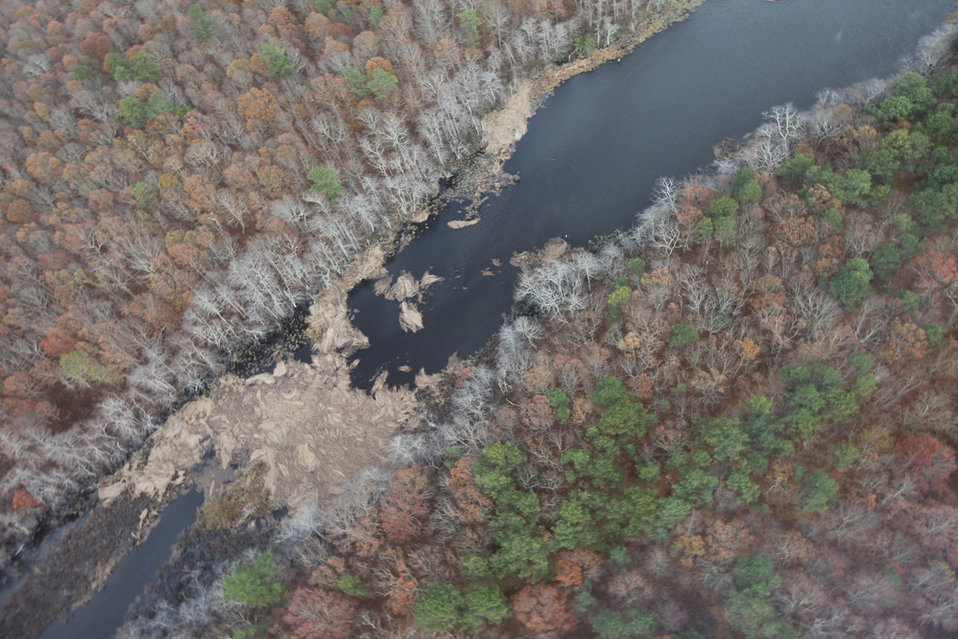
Hurricane Sandy debris at Wertheim Refuge

Aerial view of Wertheim National Wildlife Refuge on Long Island, New York, after Hurricane Sandy shows vegetation and debris in the water.